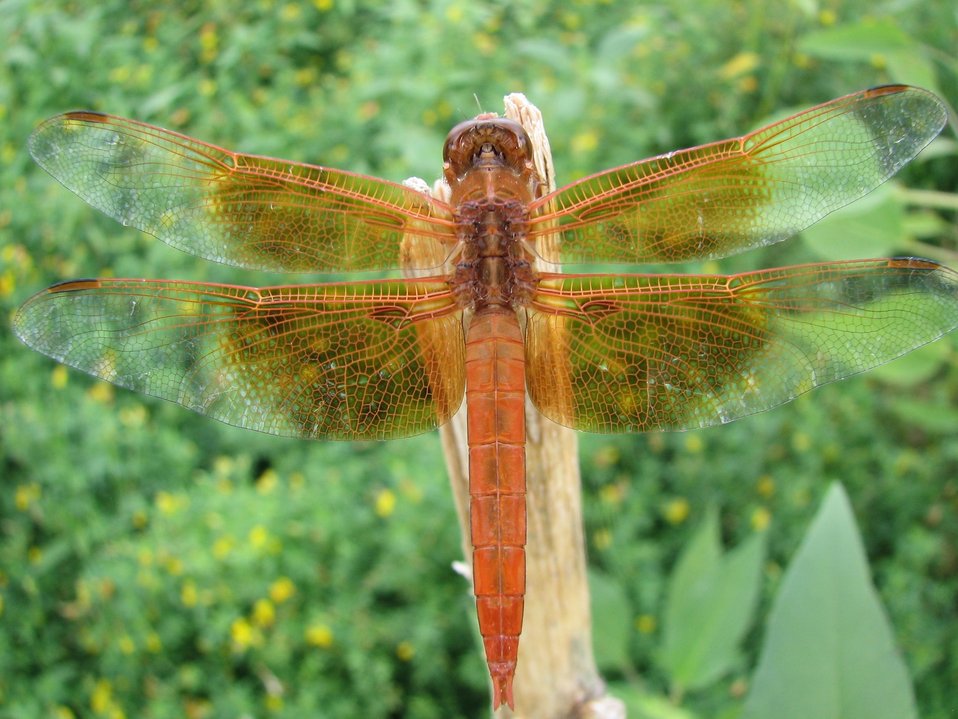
Flame skimmer

A male flame skimmer